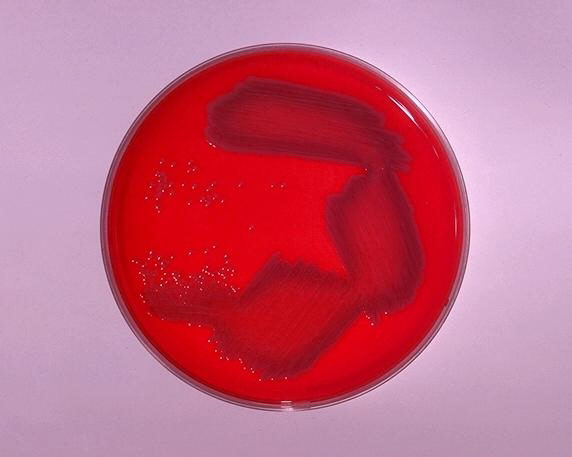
Blood agar plate culture of Flavobacterium meningosepticum.